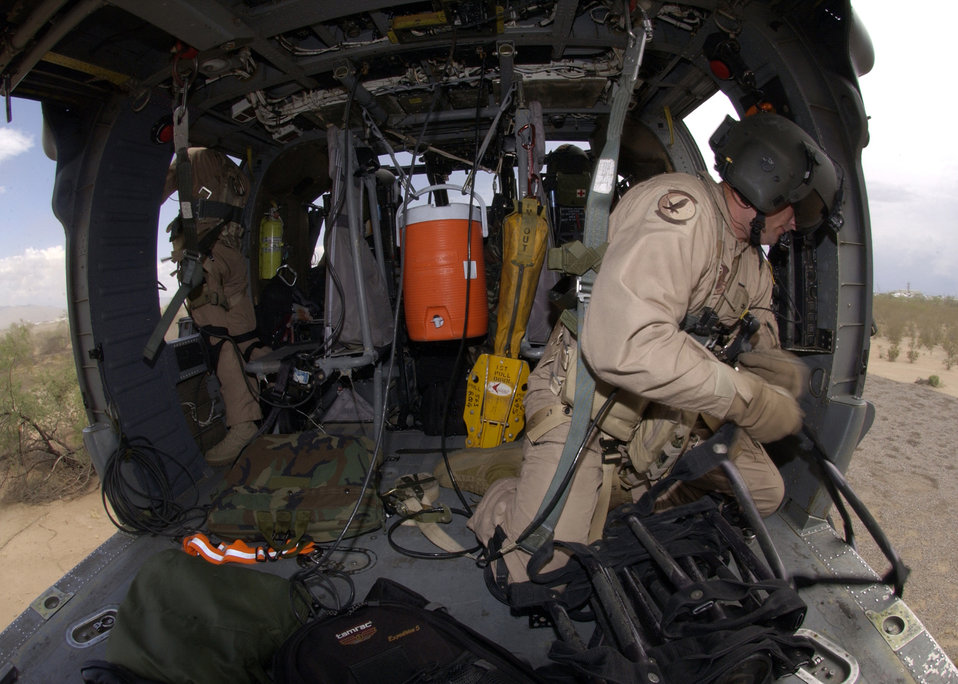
Roped

DAVIS-MONTHAN AIR FORCE BASE, Ariz. -- Master Sgt. Rich Norman drops a rope ladder during a training mission with the 55th Rescue Squadron here. Sergeant Norman is an HH-60G Pave Hawk flight engineer.